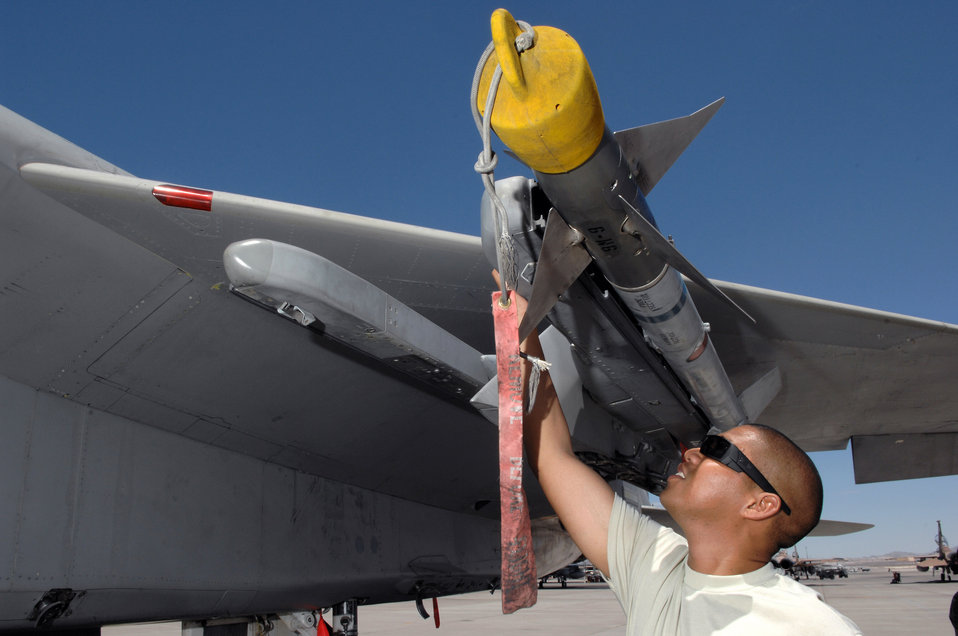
Teamwork

Tech. Sgt. John Robles performs a supervisory post-load inspection of an AIM-9 missile July 24 at Nellis Air Force Base, Nev. The 926th Group is an Air Force Reserve unit under the 10th Air Force, Naval Air Station Joint Reserve Base, Fort Worth, Texas. The group is located at Nellis AFB as an associate unit to the Air Force Warfare Center. Reservists are integrated into active duty Air Force units accomplishing the mission alongside active-duty Airmen on a daily basis. Sergeant Robles is an F-15 Eagle weapons expediter assigned to the 926th Group Det. 2.